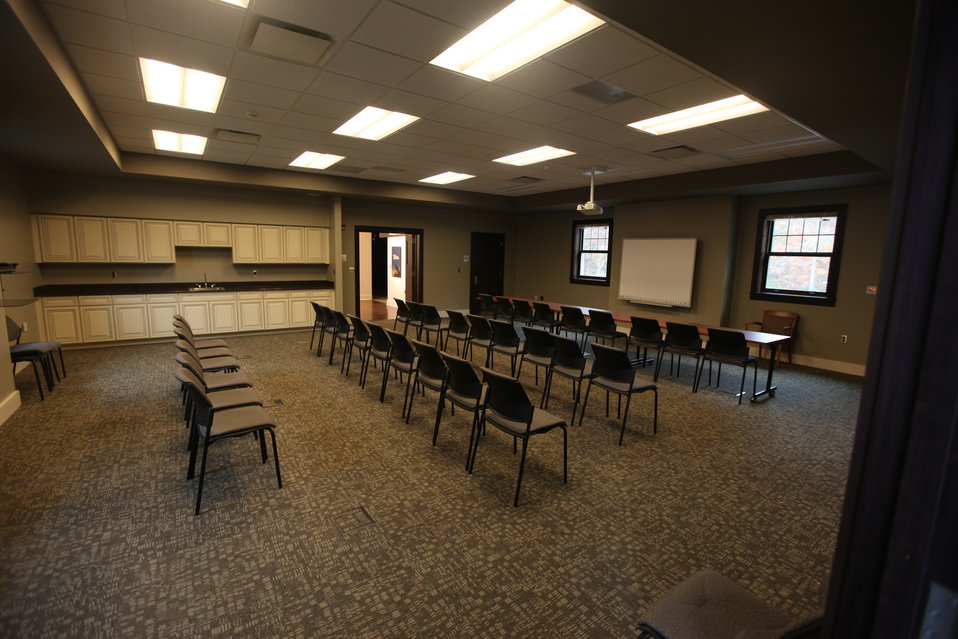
Meeting Room

One of the meeting spaces in the Visitor Center......